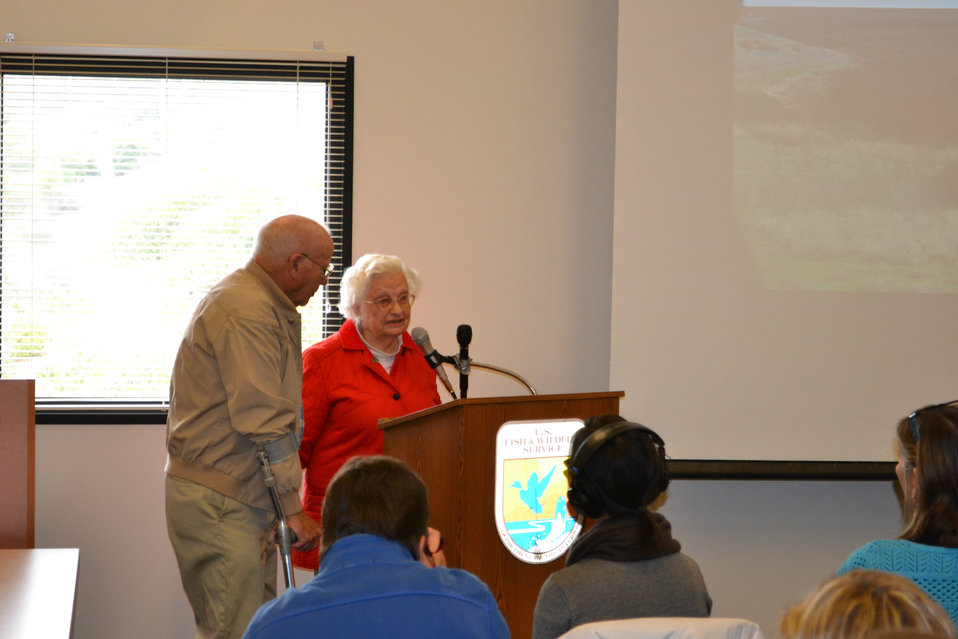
Florence LaRiviere, etal, TMRP-11-14-13

Photo Credit: Doug Cordell/USFWS

The U.S. Fish and Wildlife Service was joined by the California Department of Fish and Wildlife, the Coastal Conservancy, and many other environmental organizations active in the Bay Area to celebrate the finalization of the Recovery Plan for Tidal Marsh Ecosystems in Northern and Central California.

Here Florence LaRiviere speaks to the group.